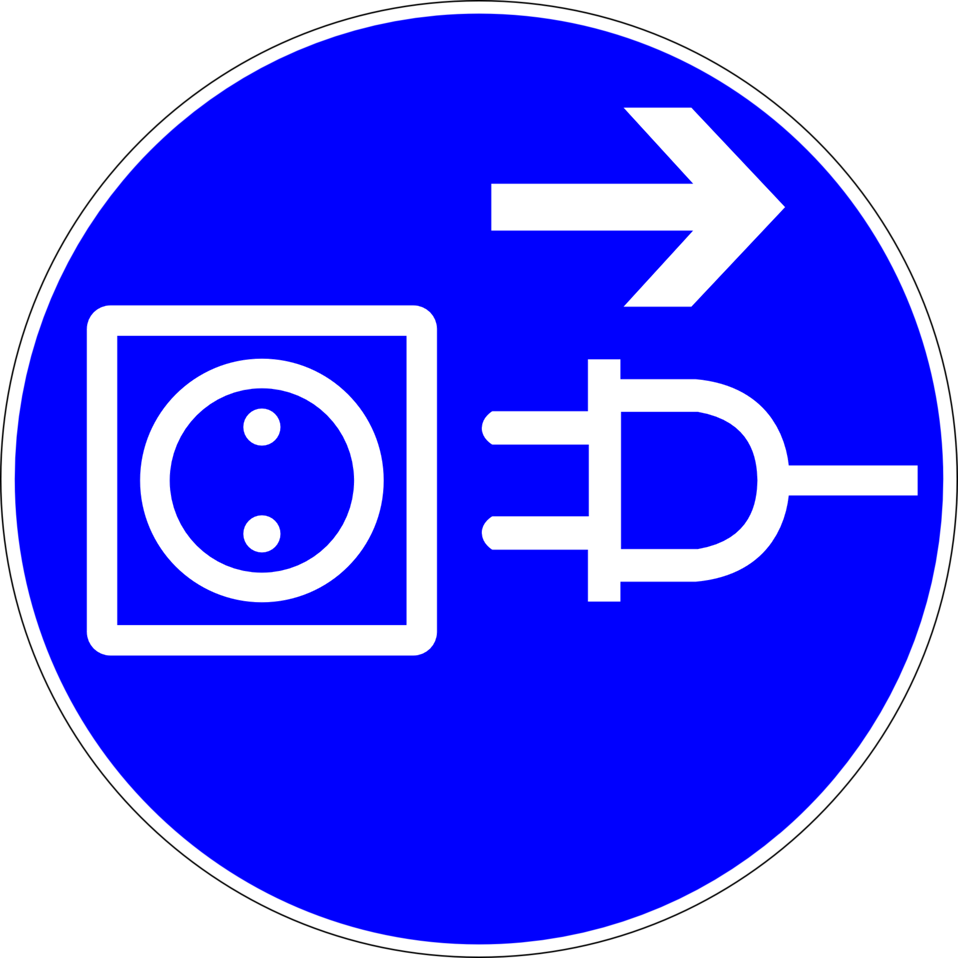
Deutsch: Vor Öffnen Netzstecker ziehen, Gebotszeichen D-M013 nach DIN 4844-2 Pull mains cord before opening, mandatory action sign D-M013 according to German standard DIN 4844-2